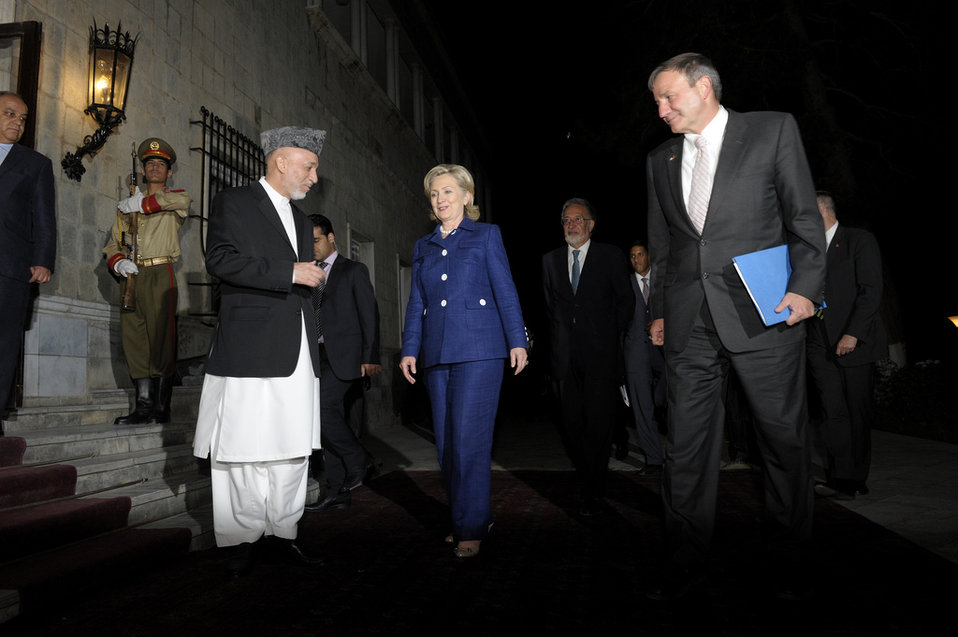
President Karzai Welcomes Secretary Clinton and Ambassador Eikenberry to the Presidential Palace

Afghan President Hamid Karzai (left) welcomes U.S. Secretary of State Hillary Rodham Clinton and U.S. Ambassador to Afghanistan Karl Eikenberry to the Presidential Palace in Kabul, Afghanistan, on July 19, 2010.